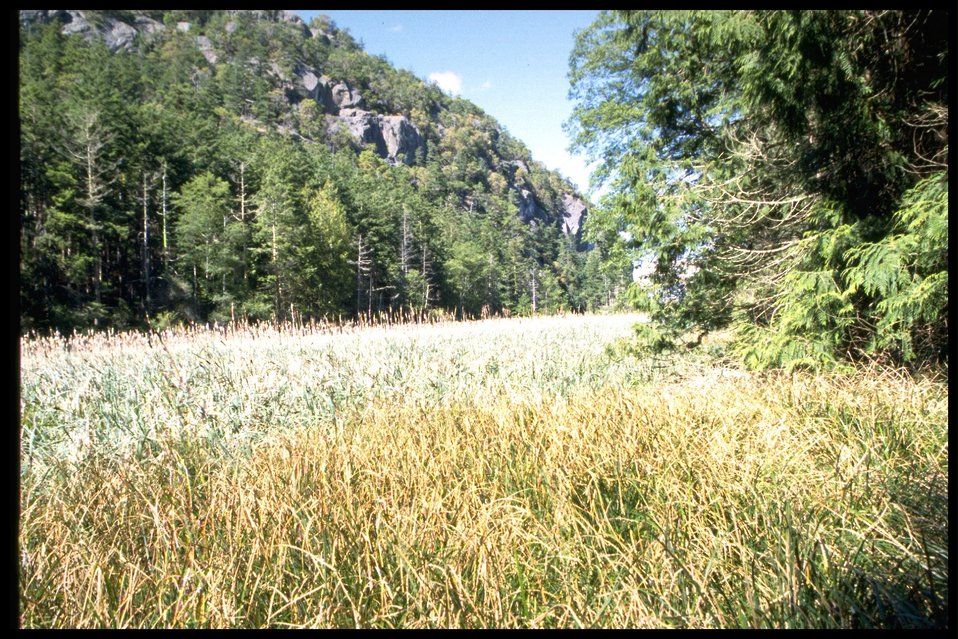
Marsh behind Watmough Bay.